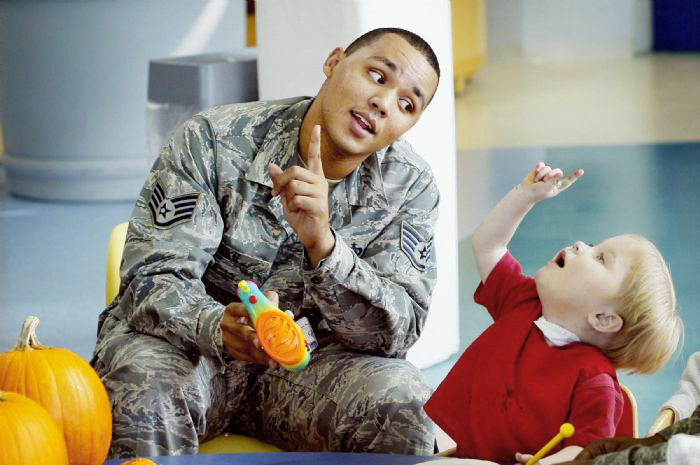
Airmen for Children expands to Beale

Staff Sgt. Jewell Hicks interacts with a child at Ranken Jordan Pediatric Hospital, Ill. Sergeant Hicks is now an imagery analyst assigned to the 13th Intelligence Squadron at Beale Air Force Base, Calif.